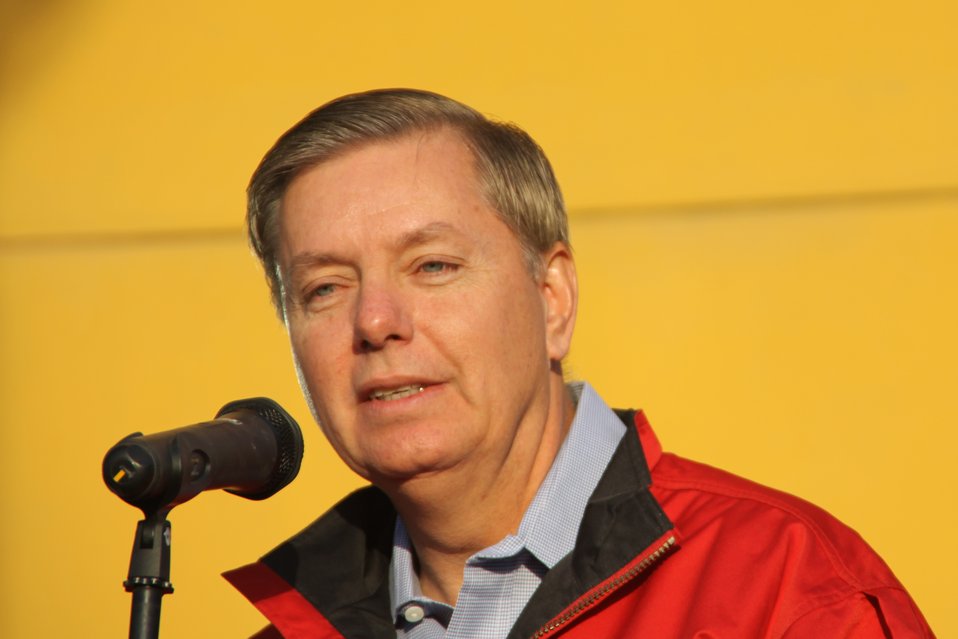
Senator Graham